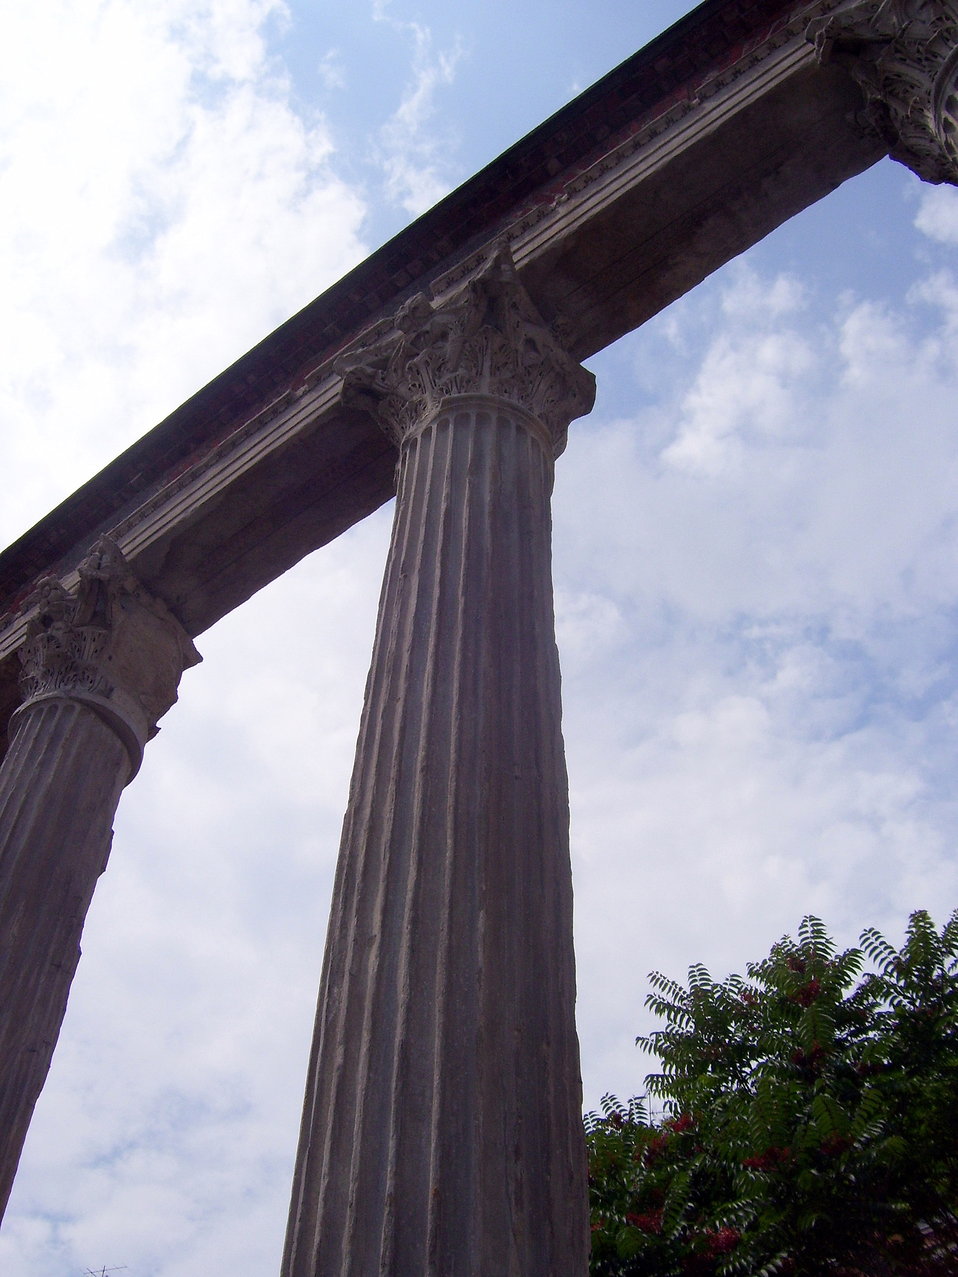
Colonne di San Lorenzo in Milan